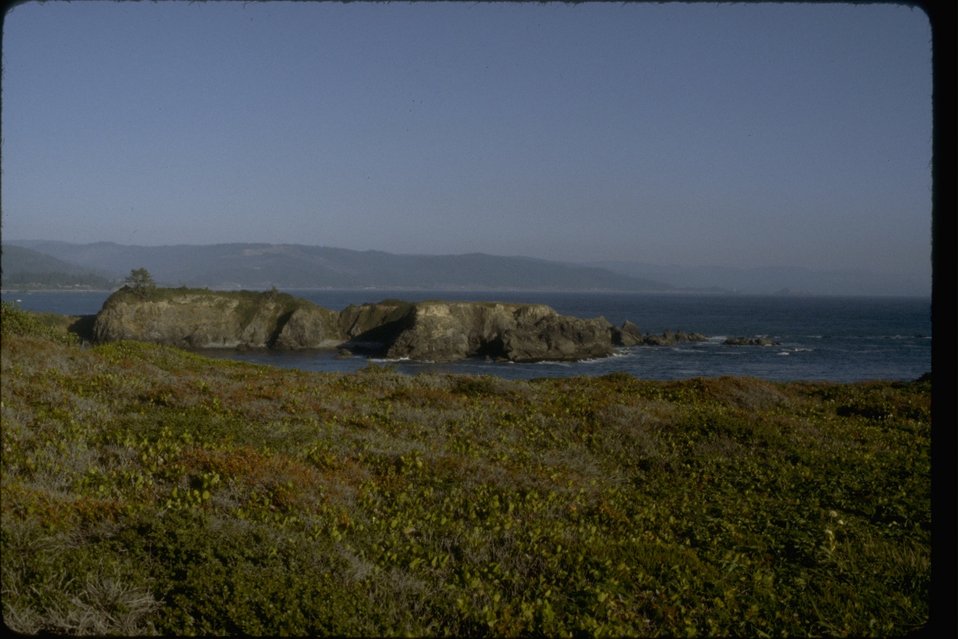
View of photo point from Zwagg Island. OR 12-14